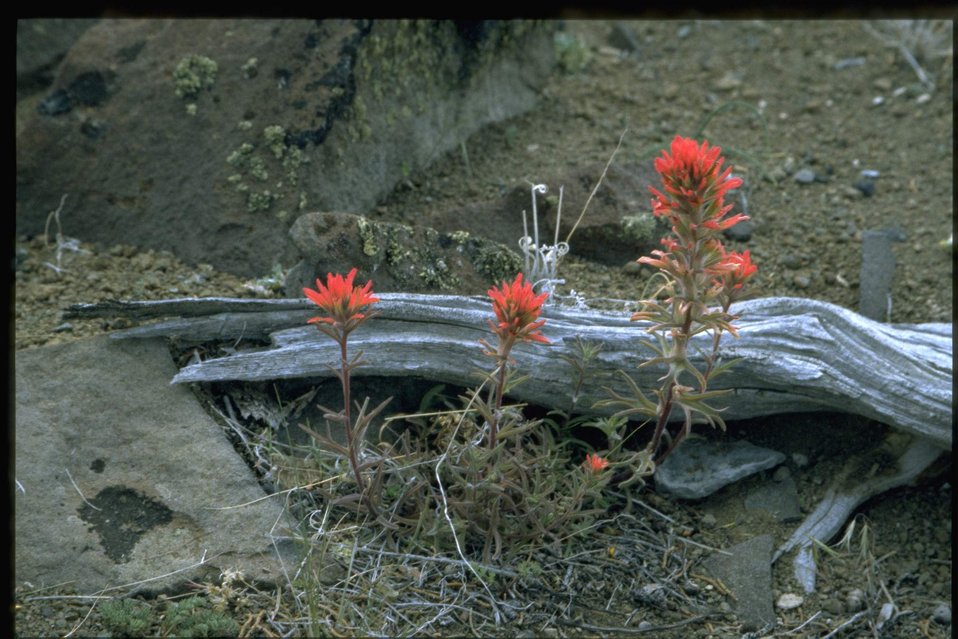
Medium shot of Indian Paintbrush wildflowers.